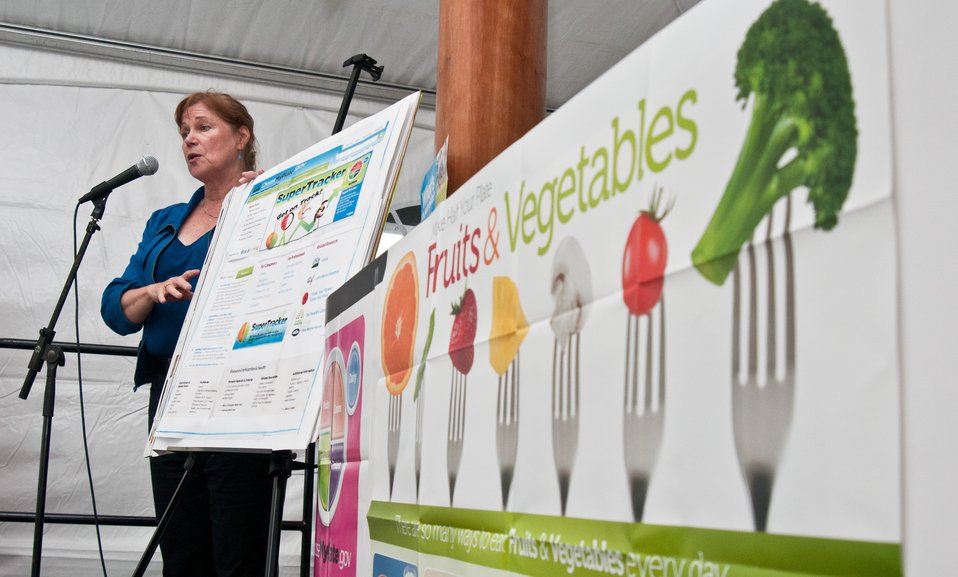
Elaine McLaughlin talks about “My Plate” and many ways people can access nutrition information and how the information can help them live healthier lives, during her presentation at the Taste of D.C., event that highlights more than 70 eateries, 30 specialty beer providers, the United Service Organization (USO) Metropolitan Washington, and live bands. It is anticipated that more than 500,000 people will attend over the course of the three-day event, which extends from the White House to the Capitol, along Pennsylvania Ave. in Washington D.C. on Saturday, October 6, 2012. Agriculture Food Safety and Inspection Service specialists presented additional talks and cooking demonstrations during the event. The Agriculture’s mobile Discovery Zone was on hand to educate children and parents about the four main principals of food safety – clean, separate, cook and chill.